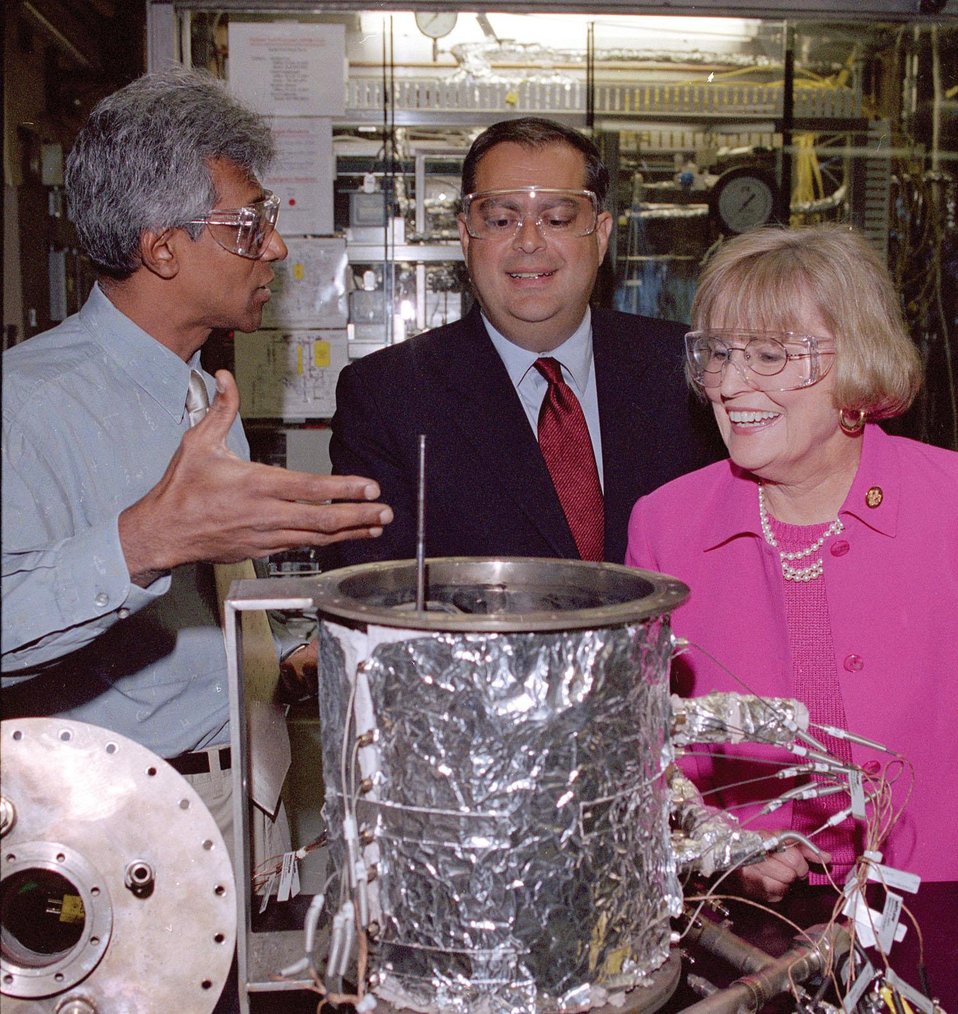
ARGONNE SCIENTIST SHOWS THE ANL DEVELOPED REFORMER TO DOE SECRETARY ABRAHAM AND U.S. REPRESENTATIVE OF ILLINOIS, JUDY BIGGERT.

ARGONNE'S REFORMER RELEASES HYDROGEN FROM COMMONLY AVAILABLE FUELS TO POWER AUTOMOTIVE FUEL CELLS. FUEL CELLS COMBINE HYDROGEN AND OXYGEN TO PRODUCE ELECTRICITY AND WATER, A MUCH CLEANER SYSTEM COMPARED TO COMBUSTION ENGINES. COMMERCIAL USE OF FUEL CELLS WILL BE ONE OF THE NATION'S FIRST STEPS TOWARD A HYDROGEN ECONOMY. DOE'S FREEDOMCAR PROGRAM CALLS FOR THE DEVELOPMENT OF HYDROGEN FUEL CELL POWERED CARS. FUEL CELLS MAY ALSO POWER LAP TOP COMPUTERS, CELL PHONES AS WELL AS HOME ELECTRICAL AND HEATING SYSTEMS.